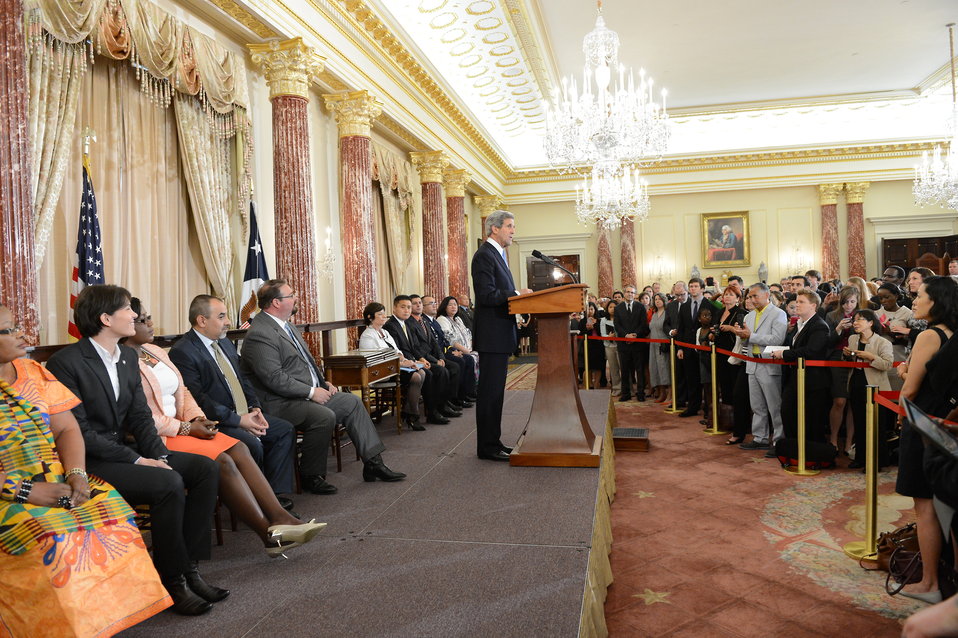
Secretary Kerry Releases the 2013 Trafficking in Persons Report

U.S. Secretary of State John Kerry releases the 2013 Trafficking in Persons (TIP) Report and honors the 2013 TIP Report Heroes, men and women whose personal efforts have made an extraordinary difference in the global fight against modern slavery, at the U.S. Department of State in Washington, D.C., on June 19, 2013.